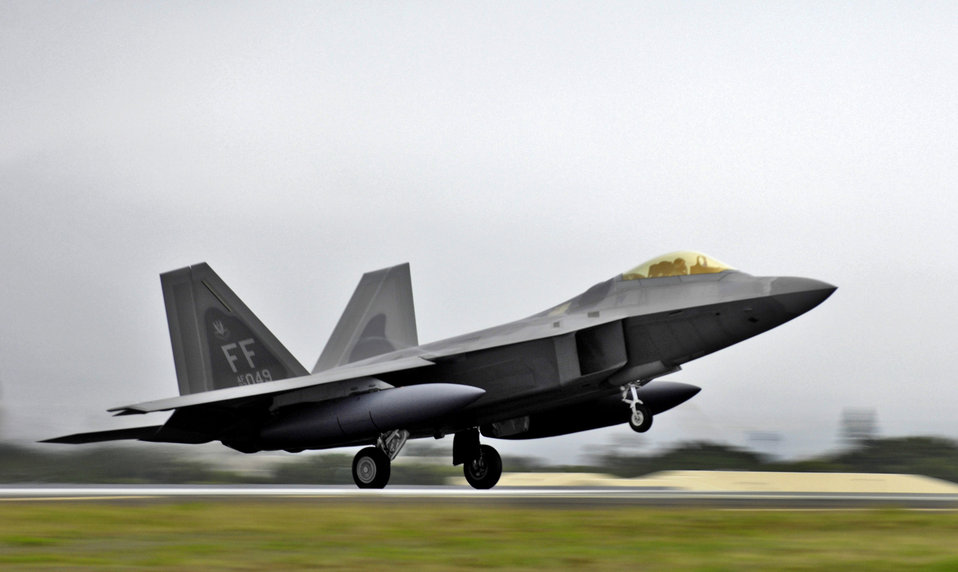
F-22 begins first overseas deployment

The first of 12 F-22 Raptors lands for a brief layover Feb. 7 at Hickam Air Force Base, Hawaii. The F-22s and more than 250 Airmen from the 27th Fighter Squadron at Langley Air Force Base, Va., are bound for Kadena Air Base, Japan, for the aircaft's first overseas operational deployment.